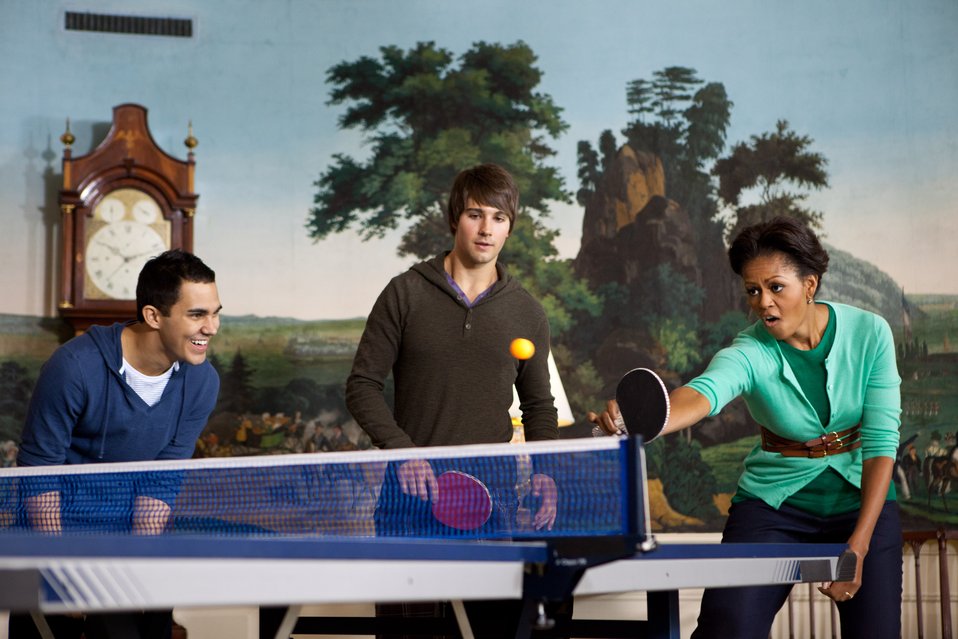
First Lady Michelle Obama plays table tennis with members of the band Big Time Rush in the Diplomatic Reception Room of the White House during a taping for NIckelodeon's Worldwide Day of Play, Saturday, Sept. 24, 2011. (Official White House Photo by Chuck Kennedy)

First Lady Michelle Obama plays table tennis with members of the band Big Time Rush in the Diplomatic Reception Room of the White House while taping a message for NIckelodeon's Worldwide Day of Play, Saturday, Sept. 24, 2011.